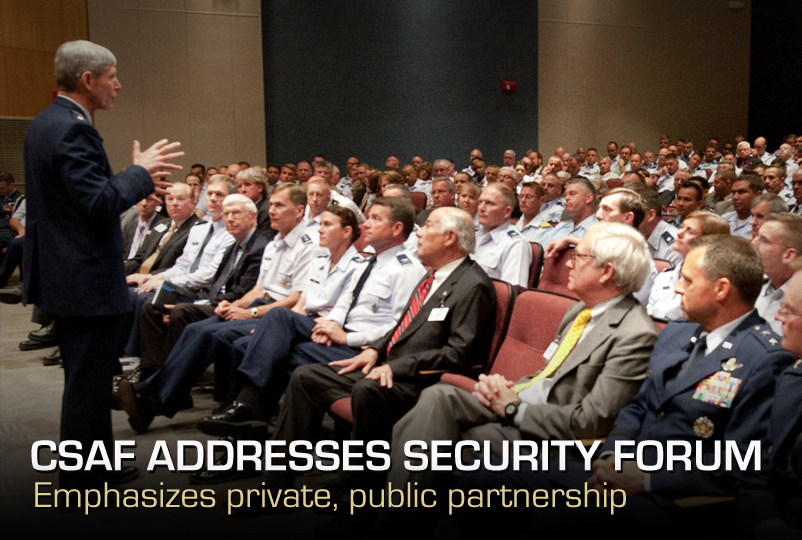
CSAF Addresses Security Forum